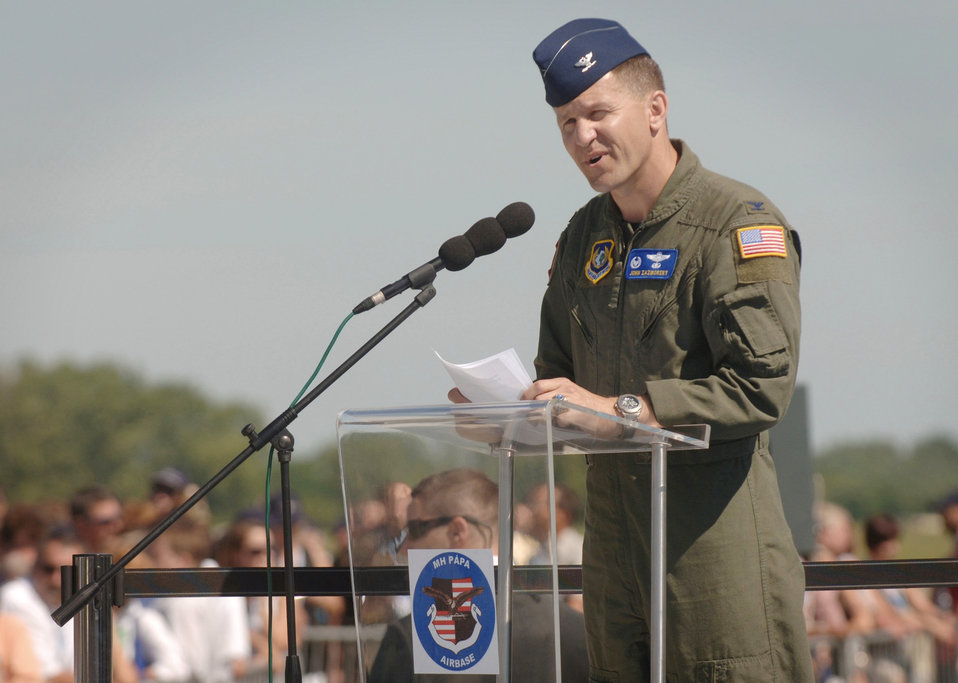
12 nations activate groundbreaking heavy airlift wing

During the official activation ceremony of a first-of-its-kind multinational heavy airlift wing at Papa Air Base, Hungary, on July 27, U.S. Air Force Col. John Zazworsky gives thanks to the 12-nation team who, during the last 10 months, stood up the organization that will provide strategic airlift worldwide for humanitarian, disaster relief, and peacekeeping missions in support of the European Union, United Nations and NATO.